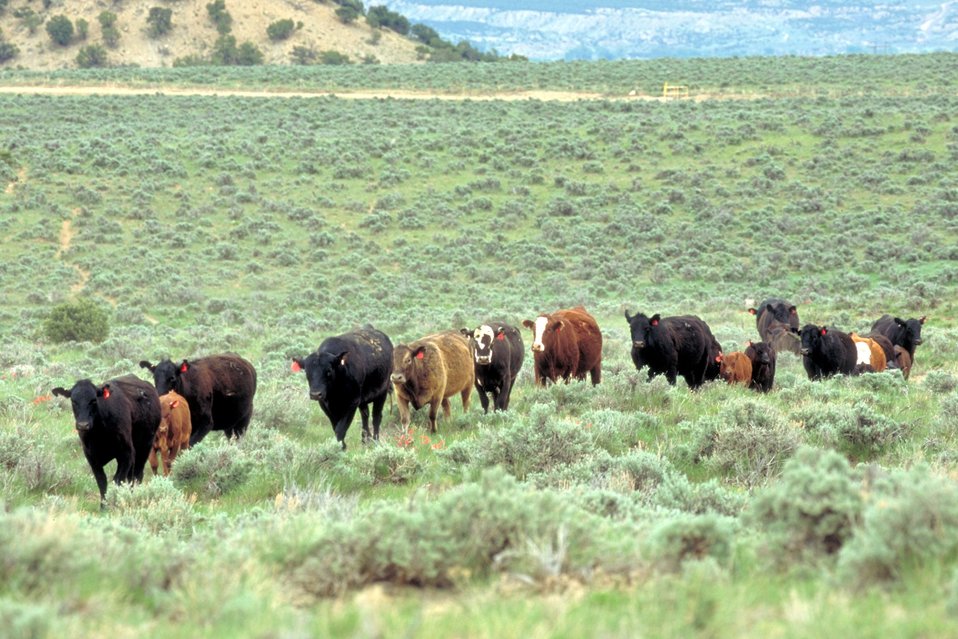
Livestock grazing on BLM lands near Price, Utah.